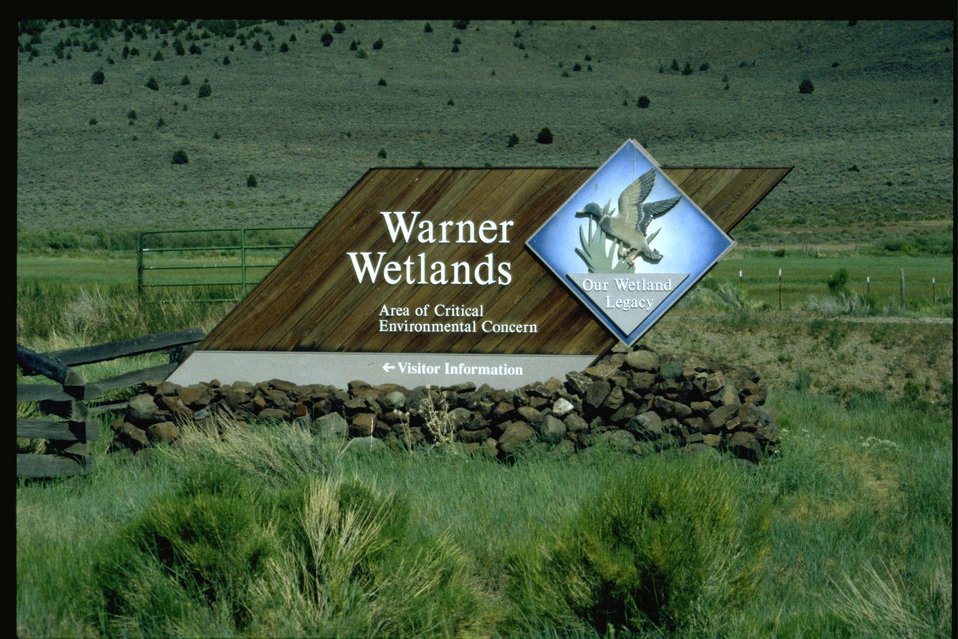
Warner Wetlands visitor information sign.